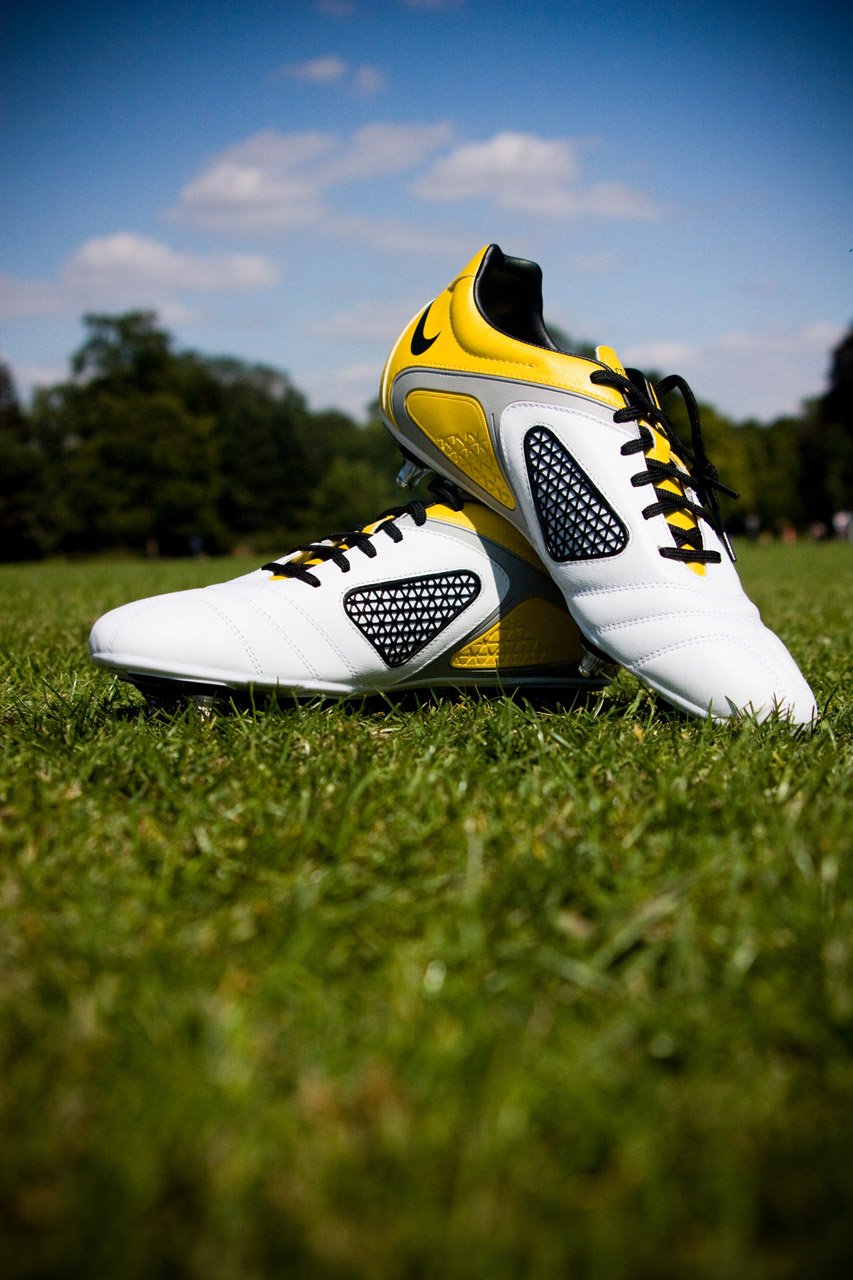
Football boots.